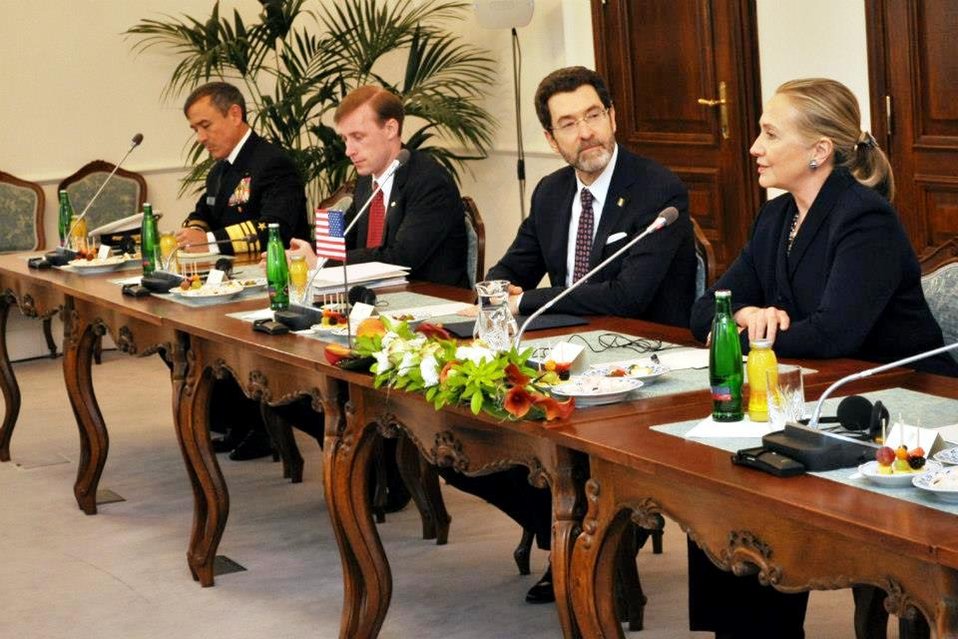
Secretary Clinton Meets With With Czech Prime Minister Necas

U.S. Secretary of State Hillary Rodham Clinton meets with Czech Prime Minister Petr Necas in Prague, Czech Republic, December 3, 2012.